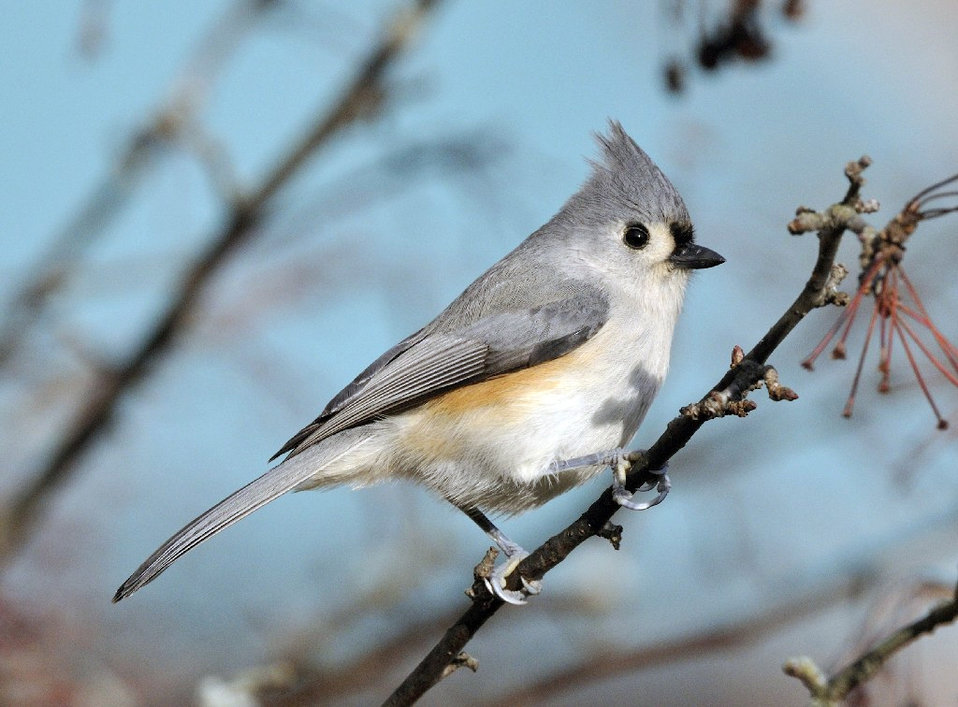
Photo of the Week - Tufted titmouse (MA)

Photo of the Week - 12/26/2011

Tufted titmouse photographed in Hadley, MA.